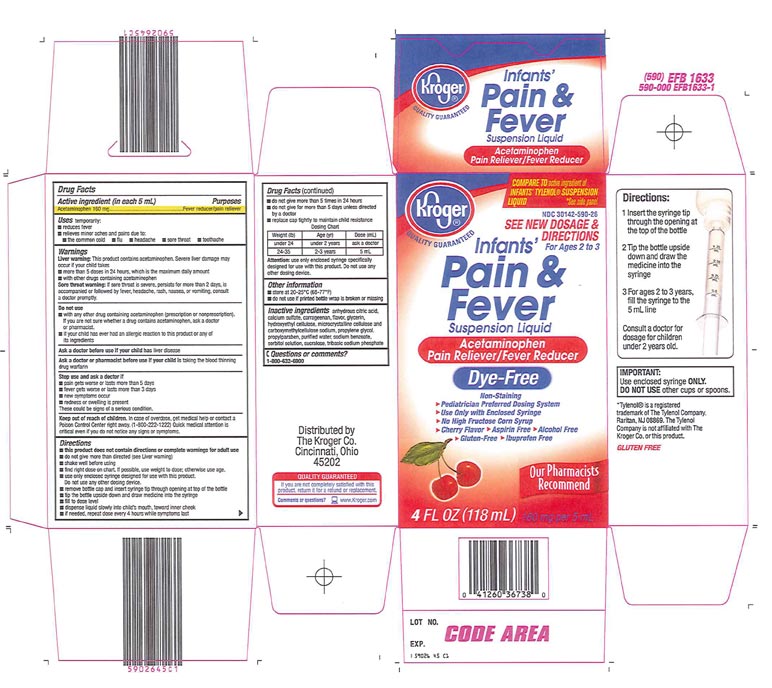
Recalled - Acetaminophen infant suspension liquid

November 1, 2013 – Product Recall – Perrigo Initiates Nationwide Voluntary Product Recall of Acetaminophen Infant Suspension Liquid, 160 Mg/5 Ml, Due to a Potential Defect with the Co-packaged Oral Syringe.